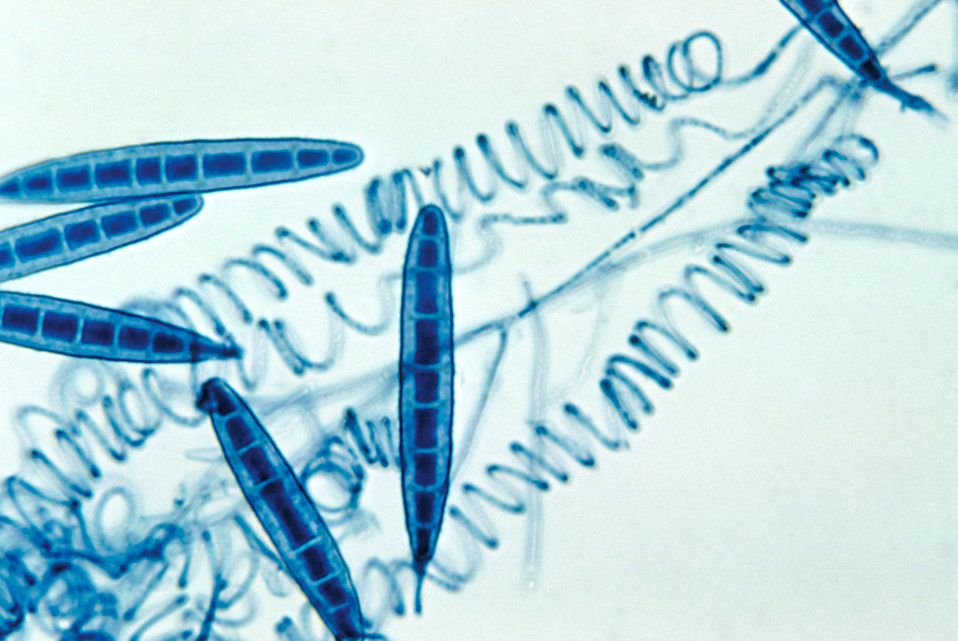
This micrograph reveals spirals and macroconidia from the edge of an immature cleistothecium of the A. grubyi fungus.